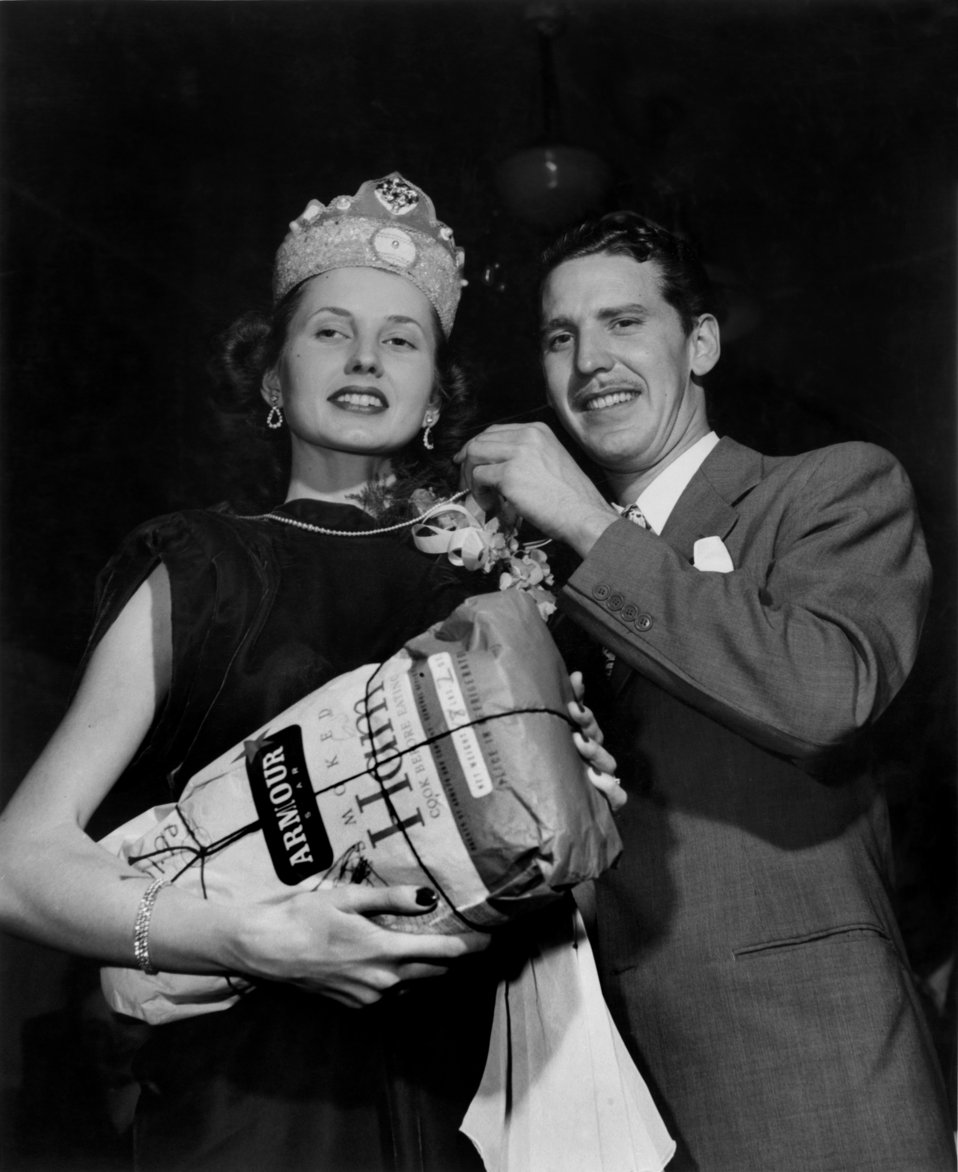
Miss Oak Ridge Oak Ridge

4166 DOE photo Ed Westcott

Miss Oak Ridge Oak Ridge Tennessee 12-26-1947